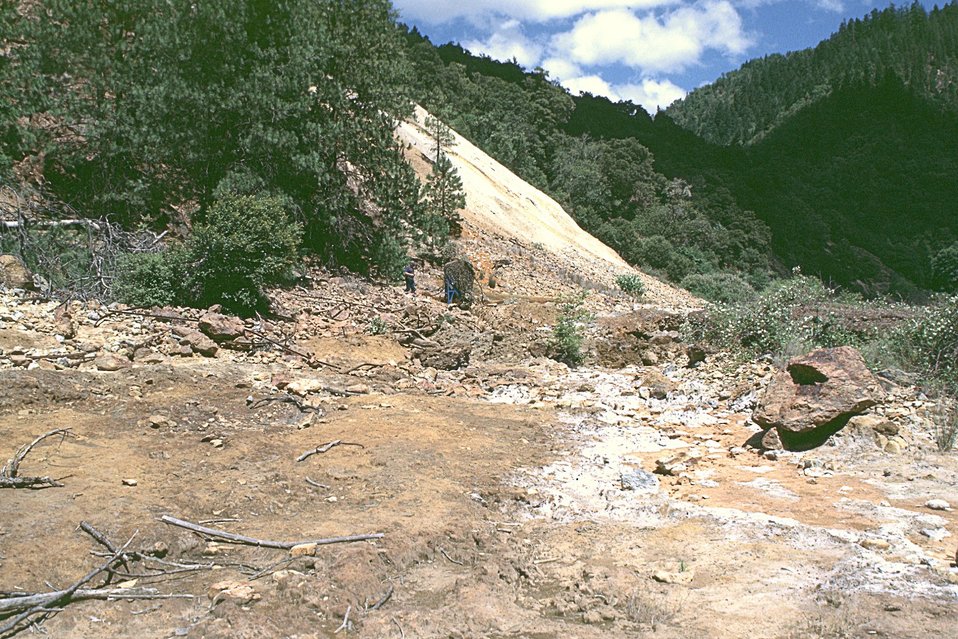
Almeda Mine, Medford District.